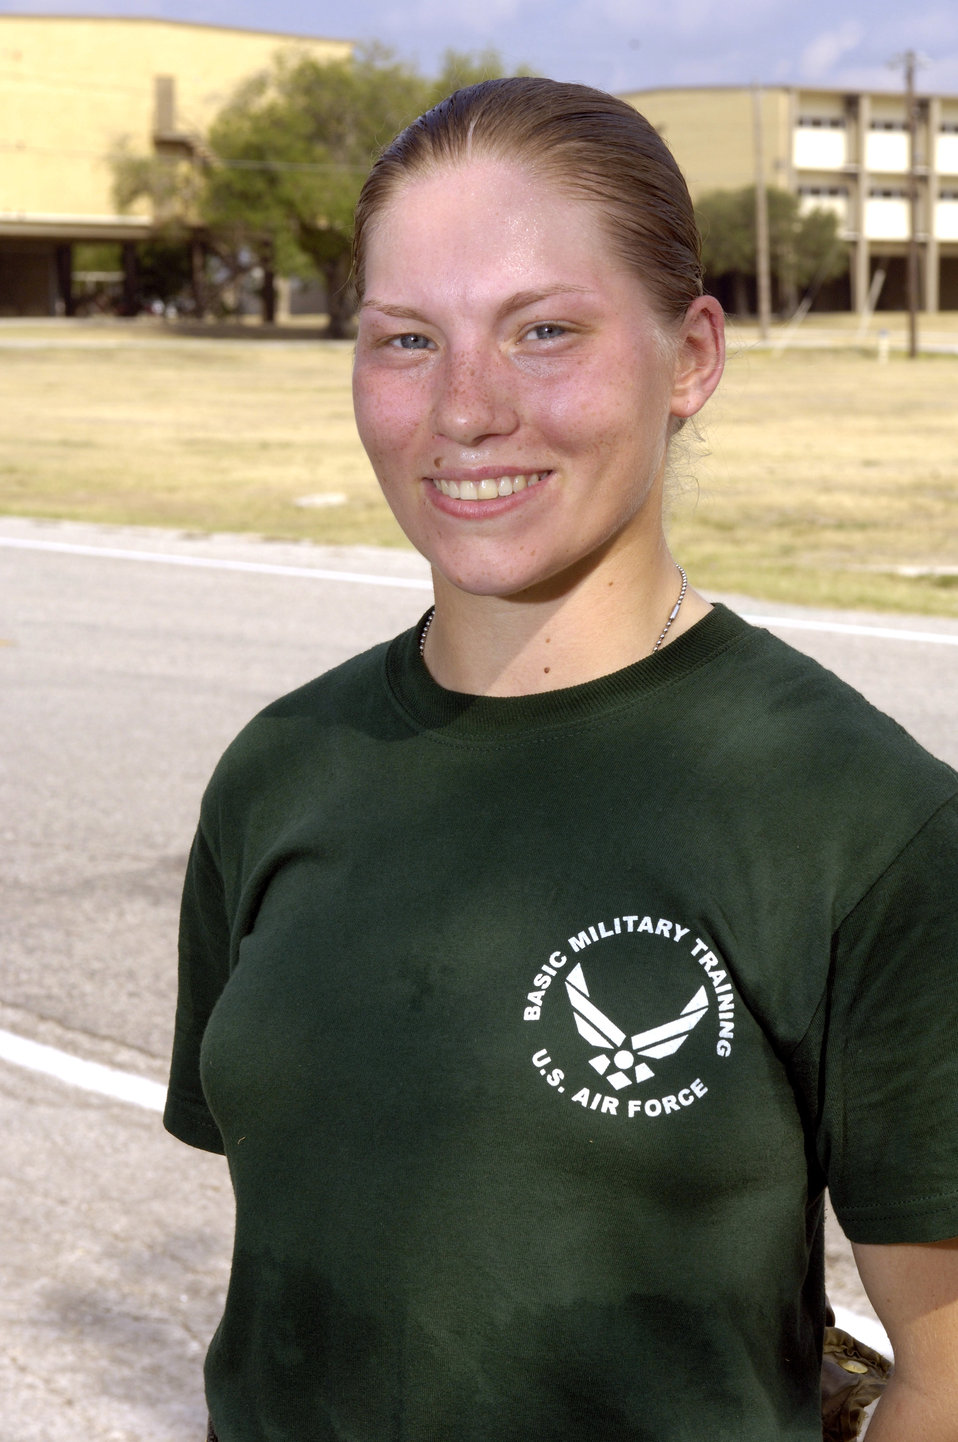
Basic training grads say 4th of July feels different now

Airman 1st Class Amy George graduated from basic military training at Lackland Air Force Base, Texas, on Friday, June 30. The Airman completed a two-and-one-half-mile run June 29. Now that she's in uniform, she has a different view of the Fourth of July holiday.